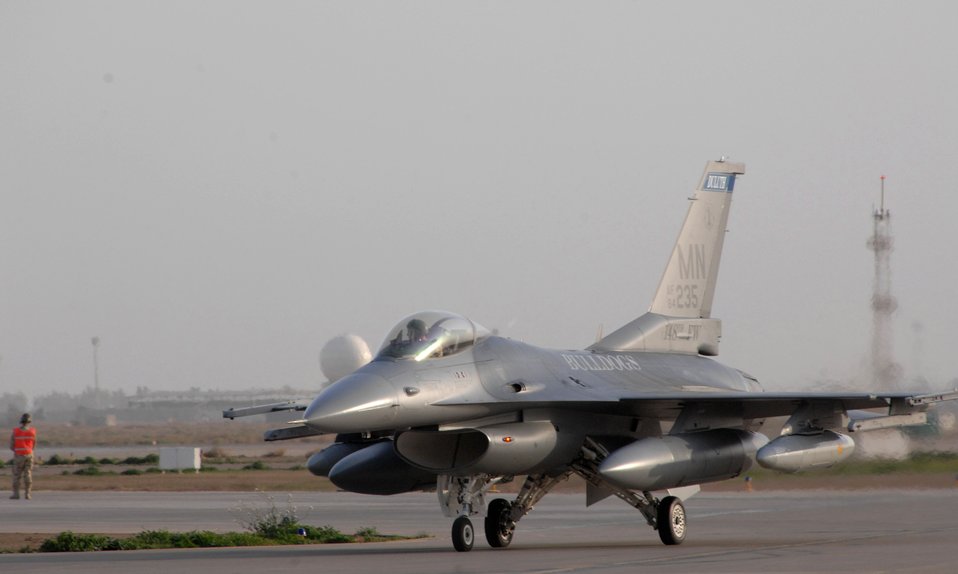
Falcons fly in for the fight

Major Mike Henkelman an F-16 Fighting Falcon pilot lands Feb. 26 in Balad Air Base, Iraq. Major Henkelman is from the 301st fighter wing in Fort Worth, Texas, but is an augmentee along with roughly 400 Air National Guardsmen from the Minnesota Air National Guard's 148th fighter wing deployed in support of Operation Iraqi Freedom.